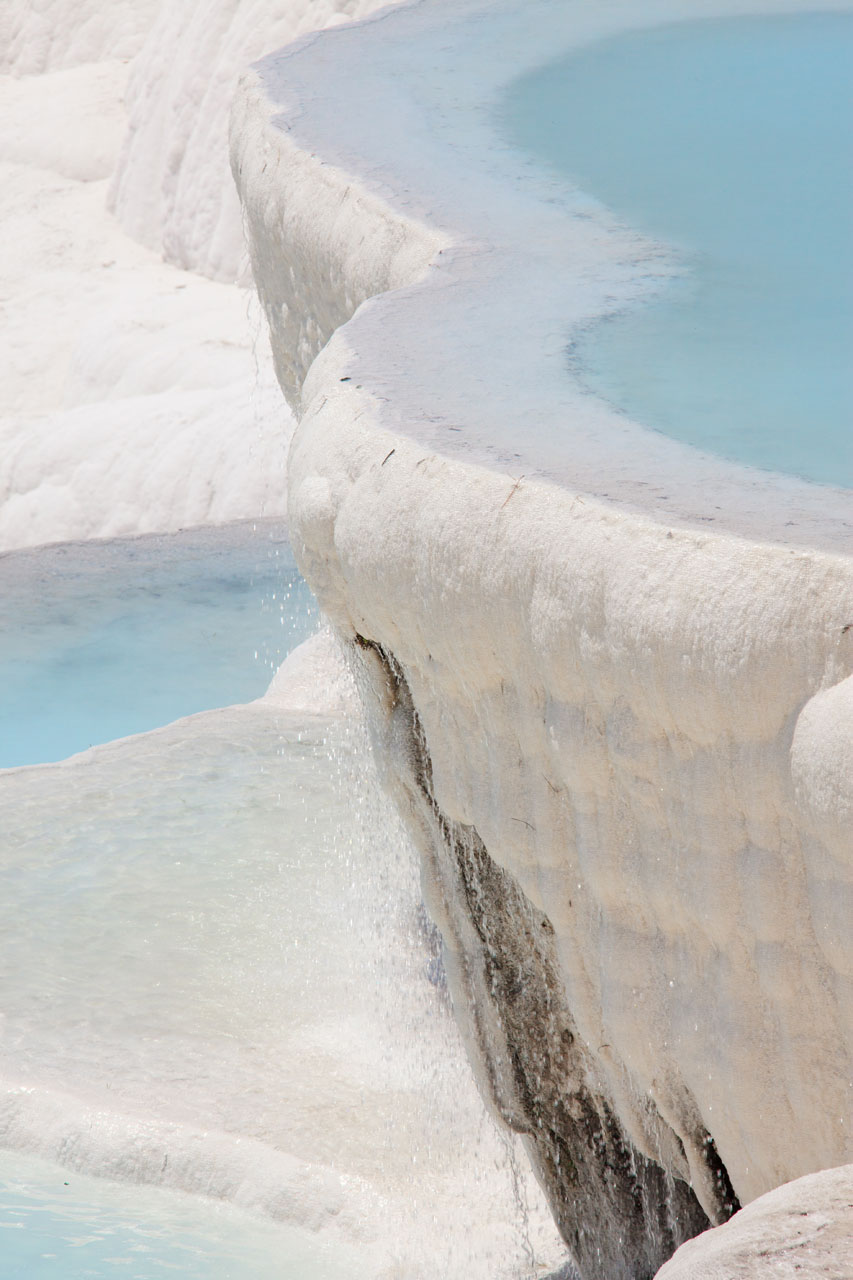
Pamukkale travertine detail

Detail of a pamukkale travertine.